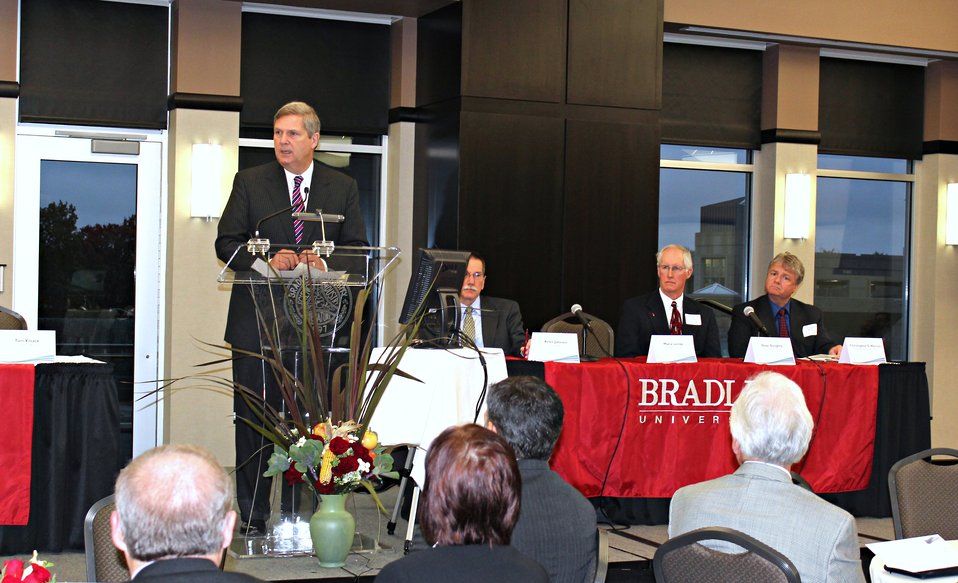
Agriculture Secretary Tom Vilsack keynote speaker at the “Future of Midwest Agriculture and Environmental Sustainability symposium at Bradley University in Peoria, IL, on Thursday, Nov. 3, 2011.